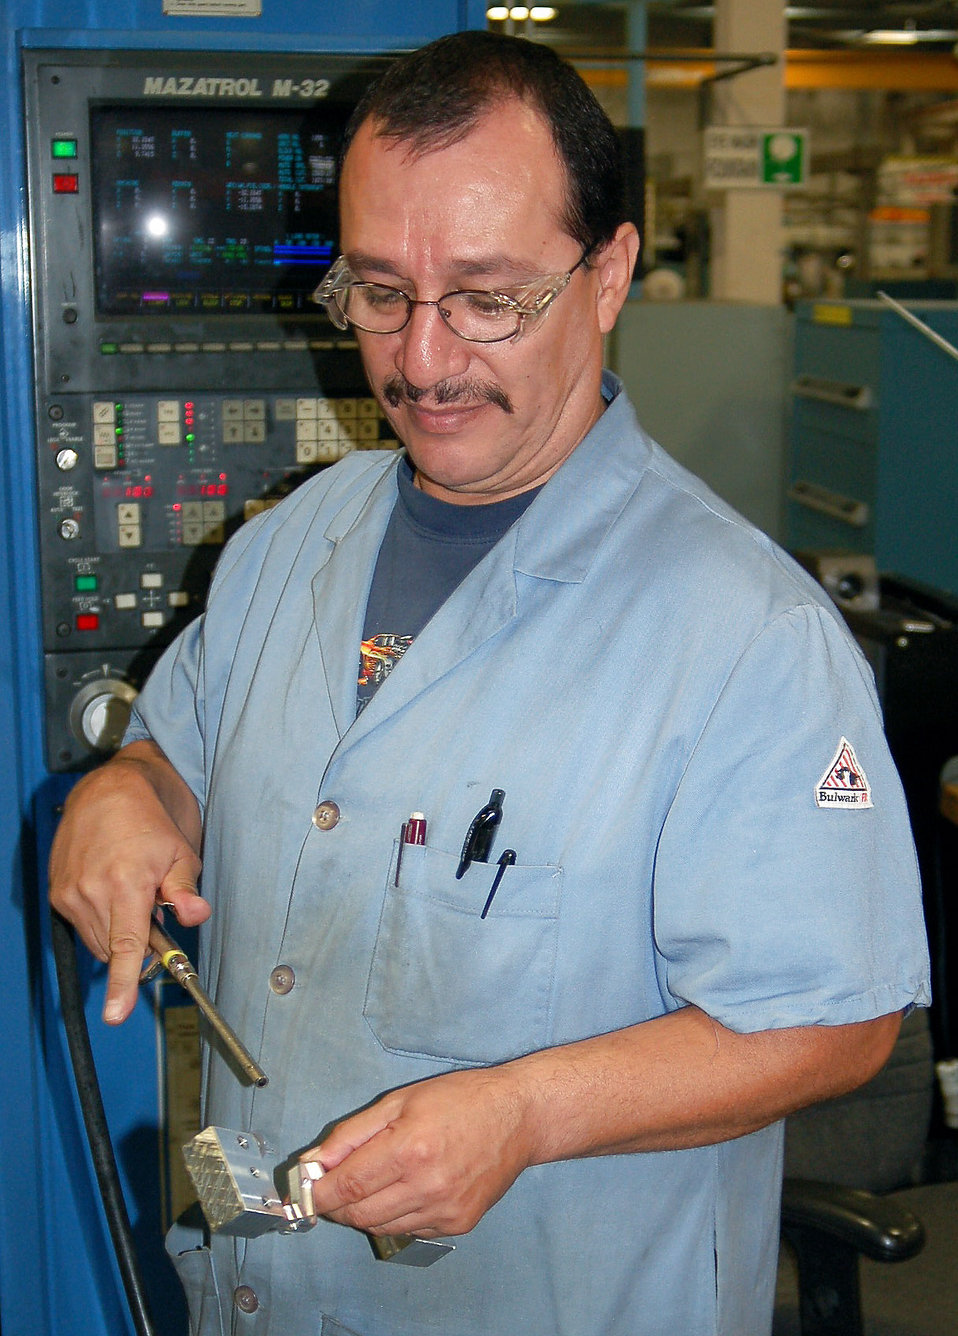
Talons get new aileron levers

Louis Macias, a machinist with the 530th Commodities Maintenance Squadron at Hill Air Force Base, Utah, air blasts a newly manufactured T-38 aileron lever to remove excess coolant following the third machine operation.